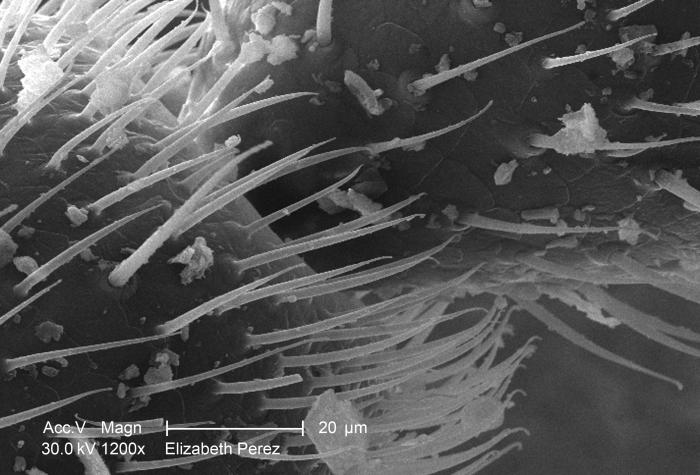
Under a moderately-high magnification of 1200X, this scanning electron micrograph (SEM) revealed some of the ultrastructural morphology found on the surface of an antenna situated on the head region of a termite found in Atlanta, Georgia. In this particular view, the joint connecting two antennal segments is the focal-pont of this image.